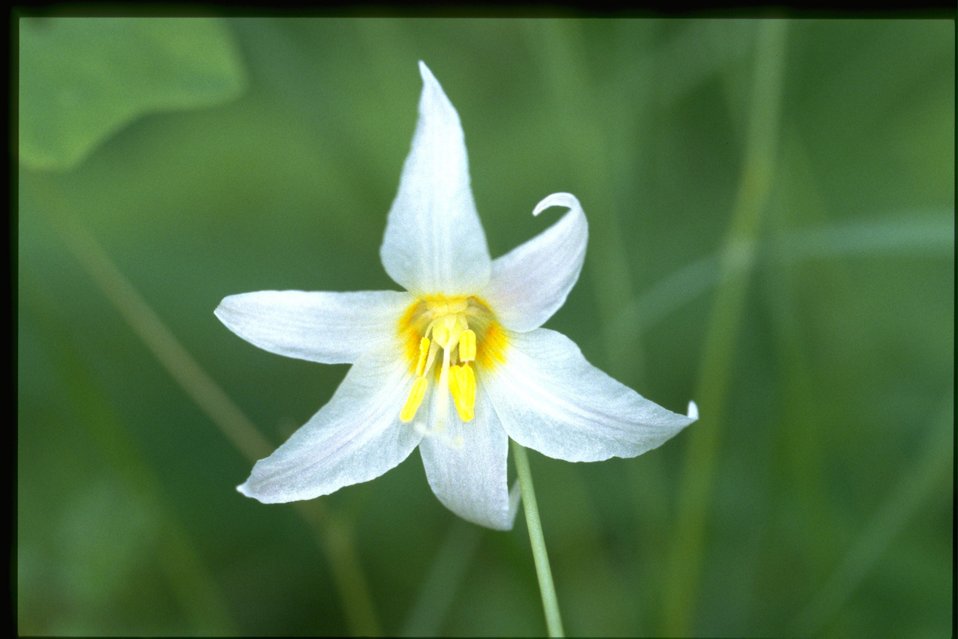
Closeup shot of Erythronium oreganum.